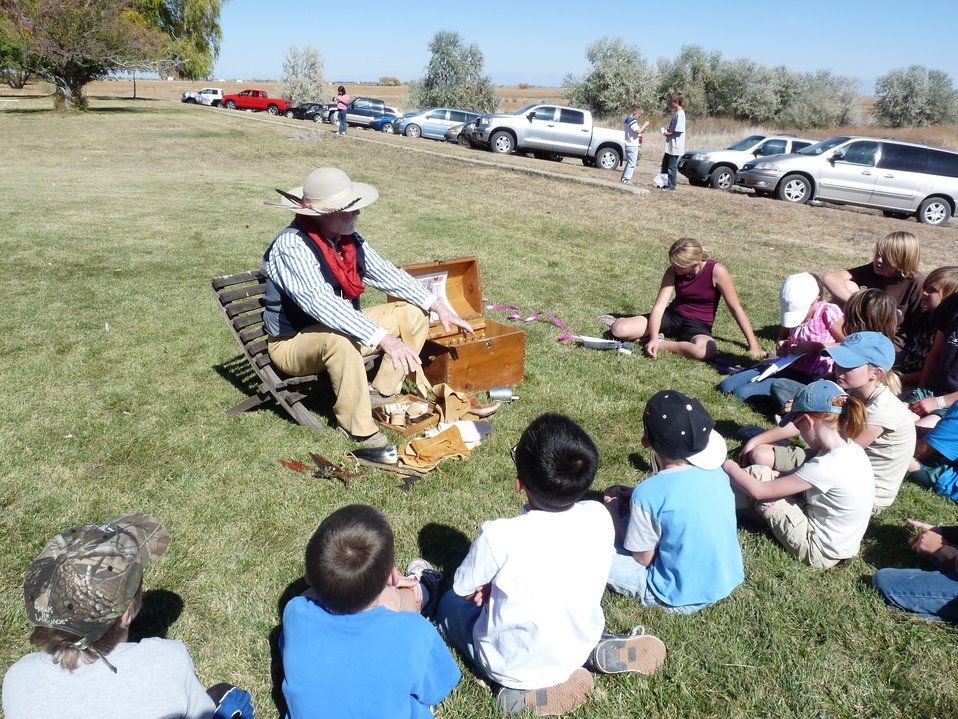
Youth listen during Pioneer Story Days

Pioneer Story Days is one of several activites available to young people during the San Luis Valley National Wildlife Refuge annual Kid's Crane Festival in Colorado.